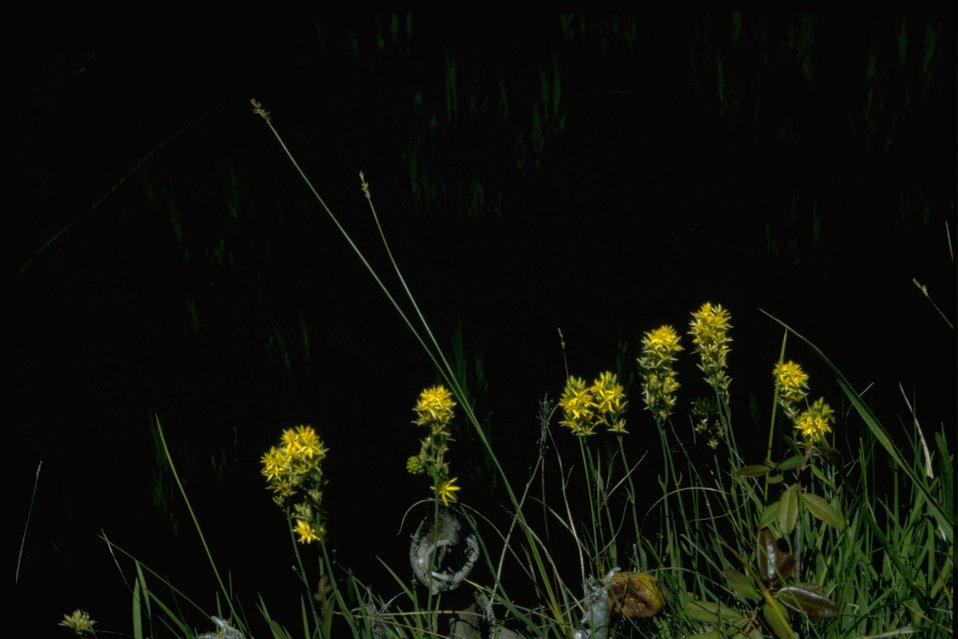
Farshot of Northecium californicum.